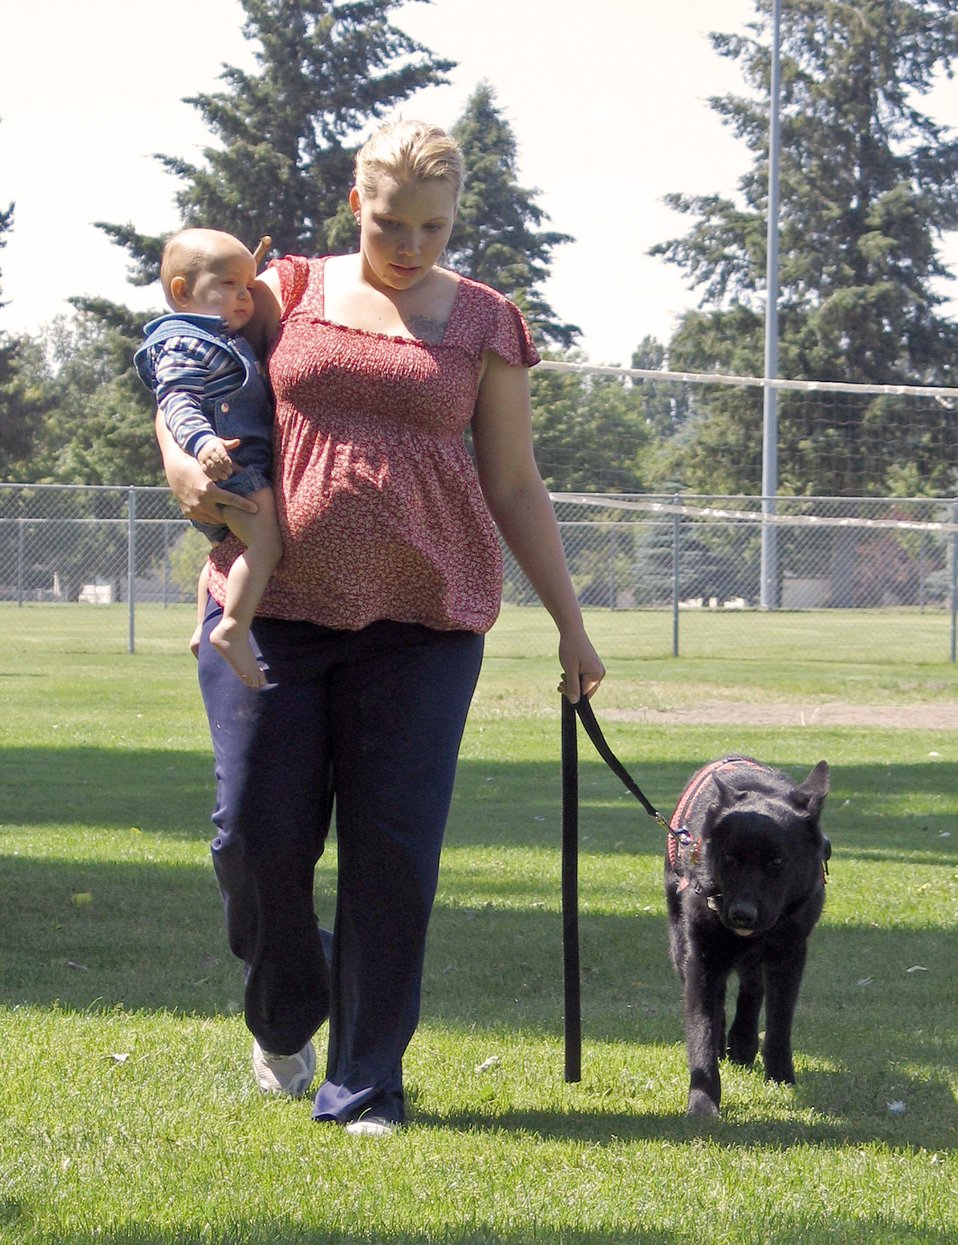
Service dog aids Fairchild family member

Kimberly Hawks walks with her 14-month-old son, Jeremy, and medical alert dog Zeuss June 22 at Miller Park at Fairchild Air Force Base, Wash. She is married to Staff Sgt. Jeremy Haks of the 92nd Civil Engineer Squadron explosive ordnance unit, and they're expecting their second child in August. Ms. Hawks is in the process of training Zeuss for his medical alert duties, which include retrieving medications, waking Ms. Hawks up and callin gher attention to medical situations.